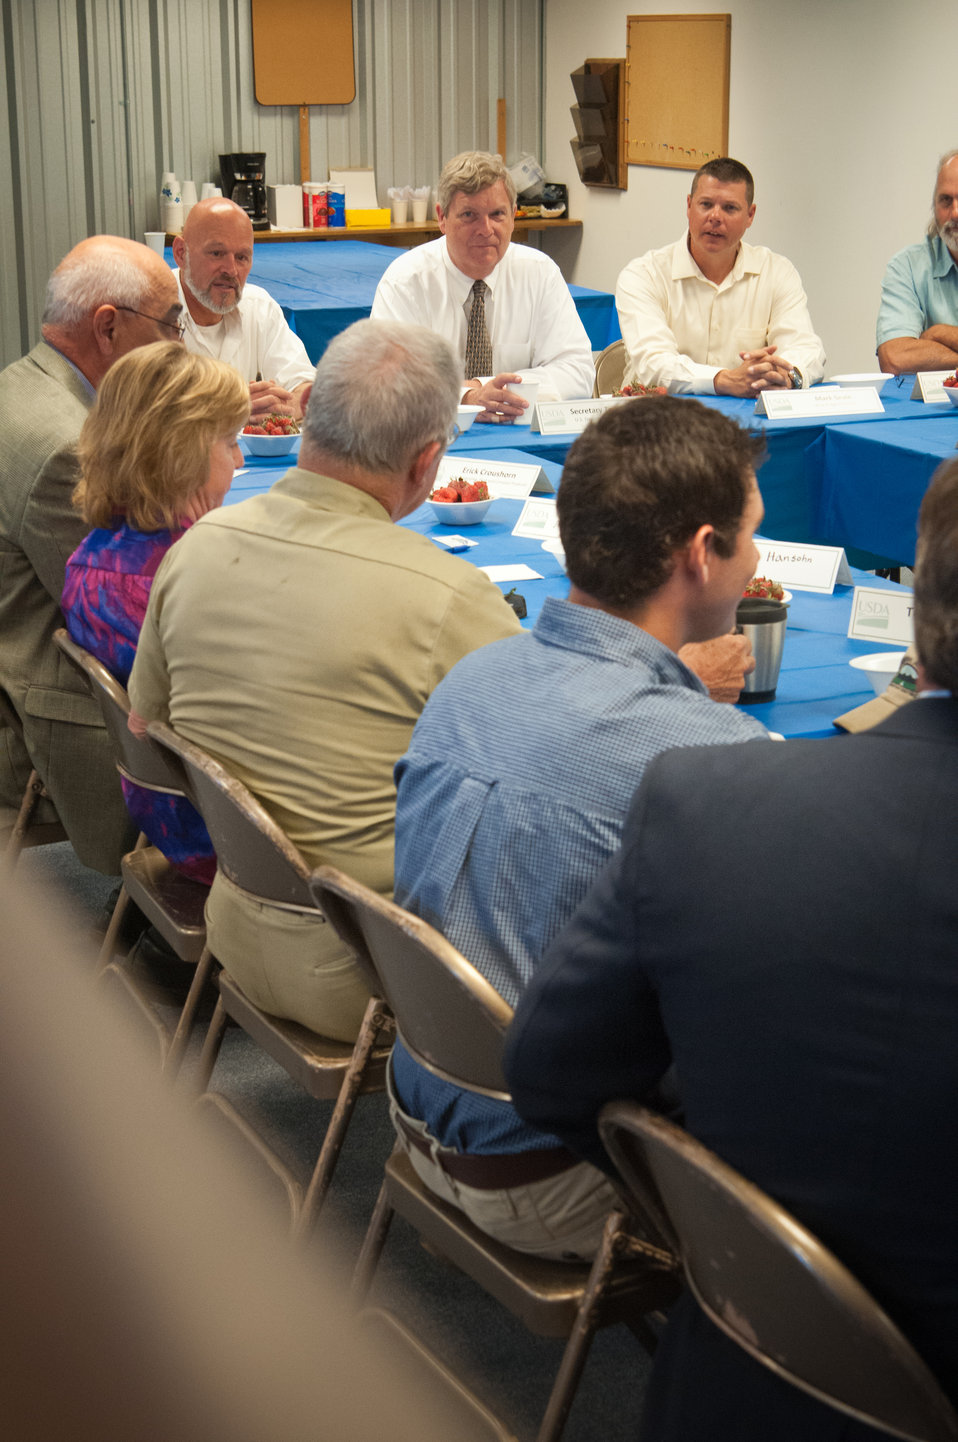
Agriculture Secretary Tom Vilsack held a round table discussion with local producers to listen to the producers concerns and answer their questions at Blue Ridge Produce in Elkwood, VA on Thursday, May 30, 2013. Blue Ridge Produce is a local food hub aggregating Virginia-grown fruits and vegetables for sale to wholesale customers in the Capitol region and strives to build a value-based relationship with Virginia growers of all sizes by handling the marketing and logistics to get their produce from farm to customer.